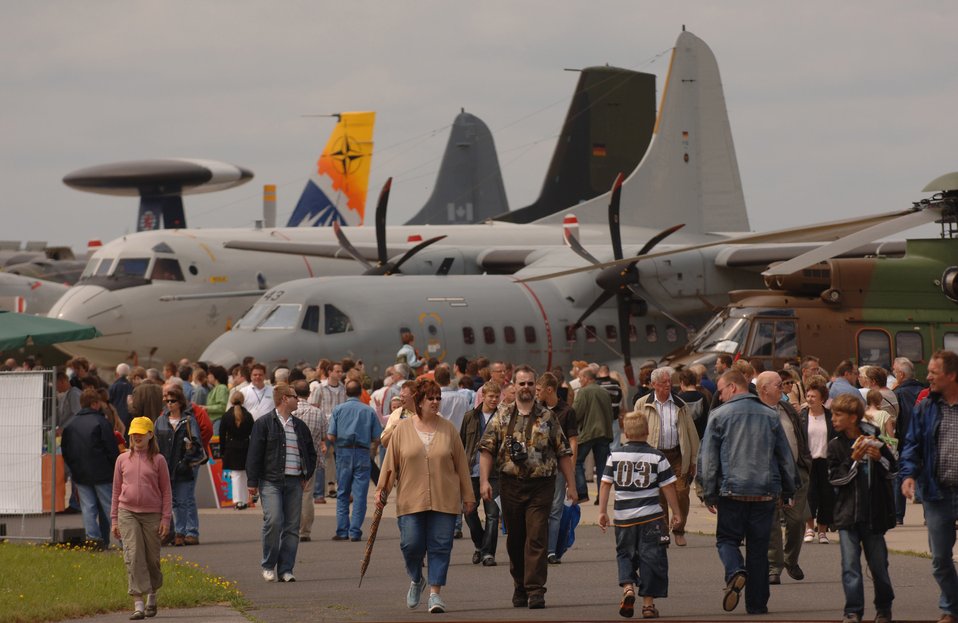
NATO celebrates 25th anniversary of E-3's arrival

Several thousand German, Belgian and Dutch citizens visit Geilenkirchen NATO Air Base, Germany, to attend the 25th anniversary celebration of the NATO E-3 Airborne Early Warning and Control Force aircraft's initial operations out of the NATO installation in northern Germany June 16.